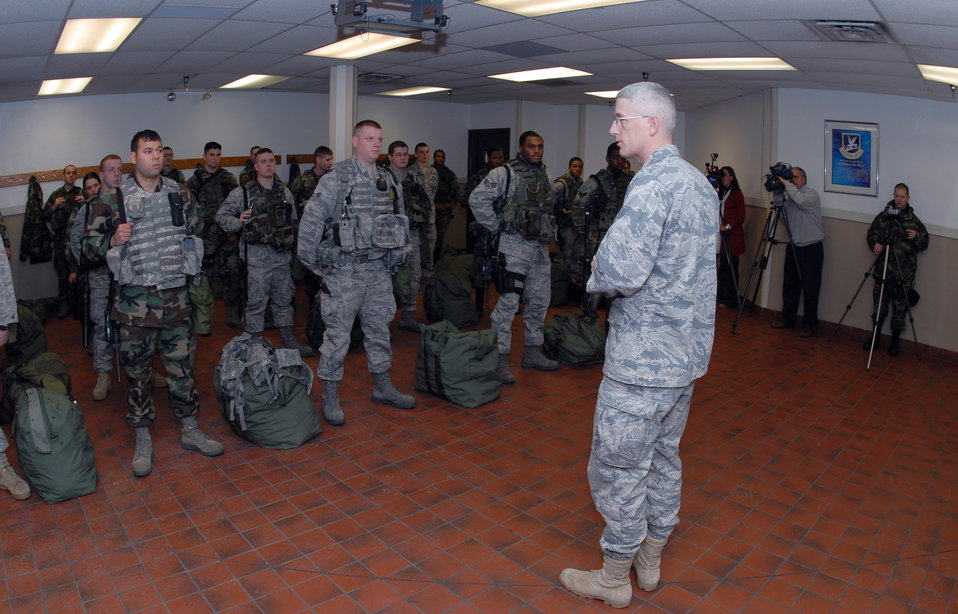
ANG forces deploy for missile security

Lt. Col. Tad J. Schauer, commander of the North Dakota Air National Guard's 219th Security Forces Squadron, addresses a joint flight of active-duty Airmen from the 91st Missile Security Forces Squadron at Minot Air Force Base, N.D., and Air National Guardsmen from the 219th SFS Dec. 18 during guard mount at the base. In the front row, Staff Sgt. John Chalupa (left) and Airman 1st Class Erik Foss (center) from the 219th SFS are the first ANG members to work the missile security mission with active-duty security forces Airmen.